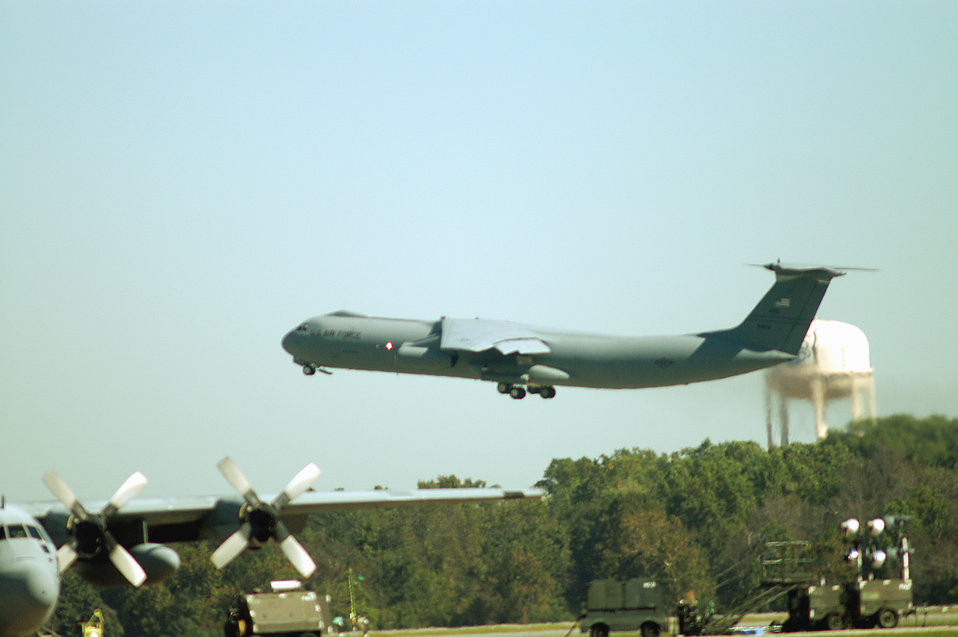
The end of an era

ROBINS AIR FORCE BASE, Ga. -- A C-141 Starlifter, Tail No. 65-0248, departs Oct. 16 following a ceremony to mark the end of C-141 maintenance here. The Air Force expects to phase the aircraft out of its inventory in 2006.